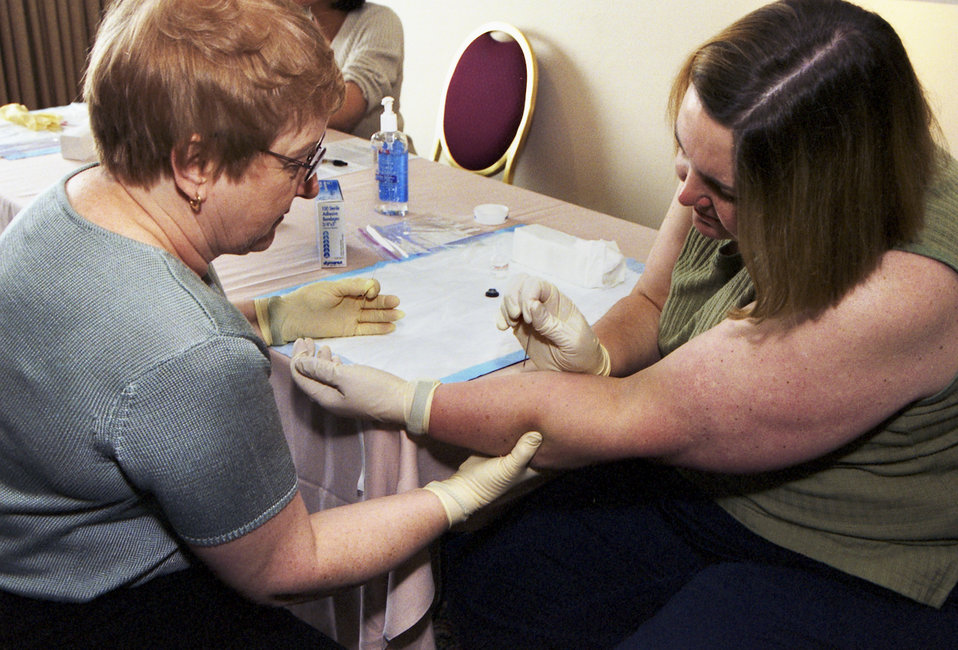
Jacqueline Kowalski (Left) and Lorna Will of Wisconsin practice proper technique with a bifurcated needle at smallpox training.